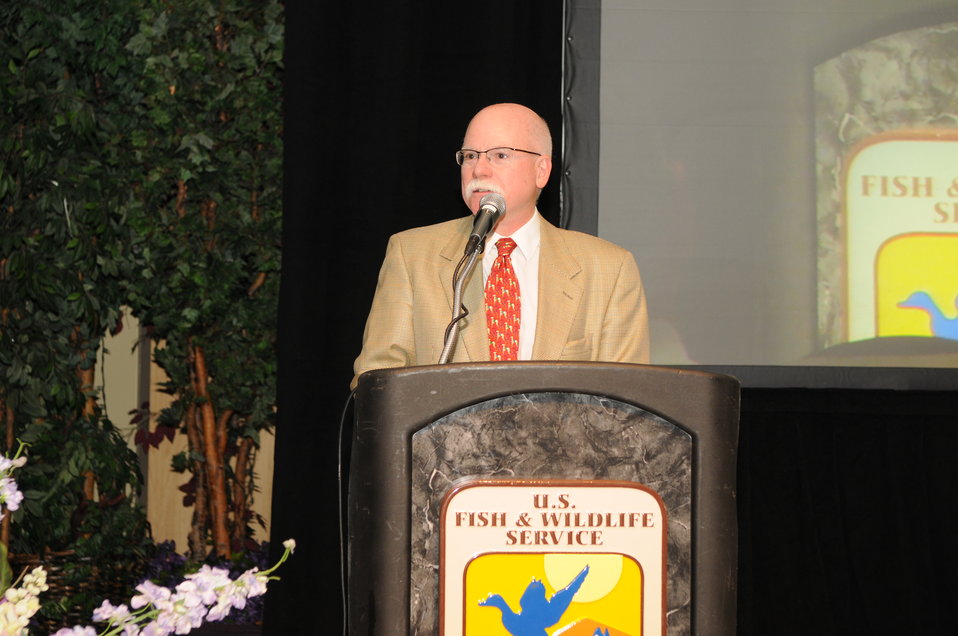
Opening Remarks

The U.S. Fish & Wildlife Service sponsored the 2012 Federal Duck Stamp Art Contest September 28 and 29 in Ogden, Utah, at Weber State University. A panel of five judges was responsible for choosing the art work used to design the 2013-2014 Migratory Bird Hunting and Conservation Stamp.